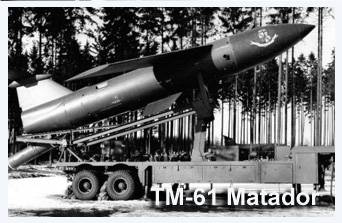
TM-61 Matador

A Matador missile on its launcher near Hahn Air Base, West Germany, in an undated photo. The missile was assigned to the 701st Tactical Missile Wing.